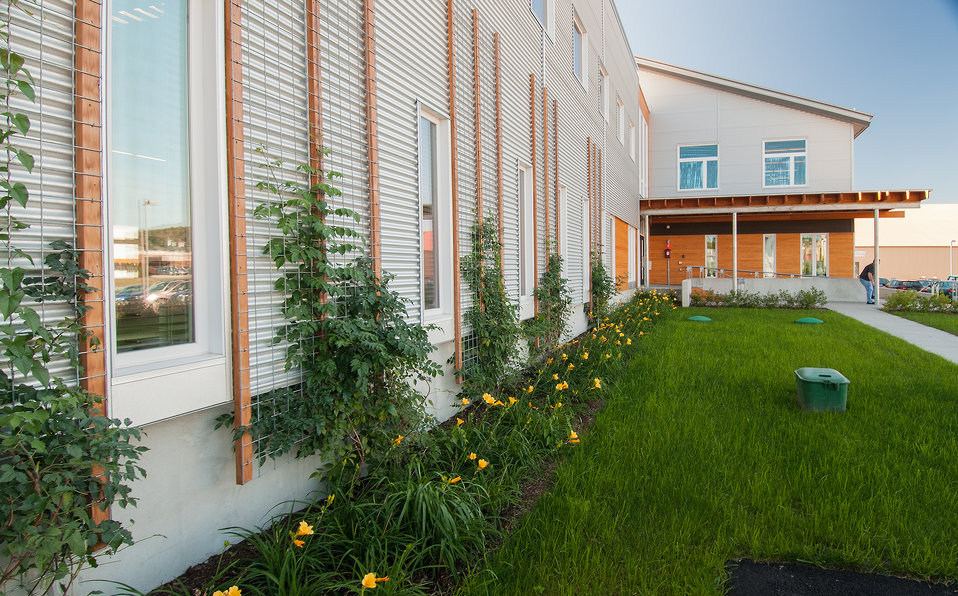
Through the assistance of a U.S. Department of Agriculture (USDA) Rural Development (RD) Community Facilities Grant the Central Vermont Community Action Council whose mission is to create economic security for low to moderate income residents in rural Central Vermont consolidated many of its programs and more than half of its employees into one campus in downtown Barre, VT on Sep. 18, 2013.